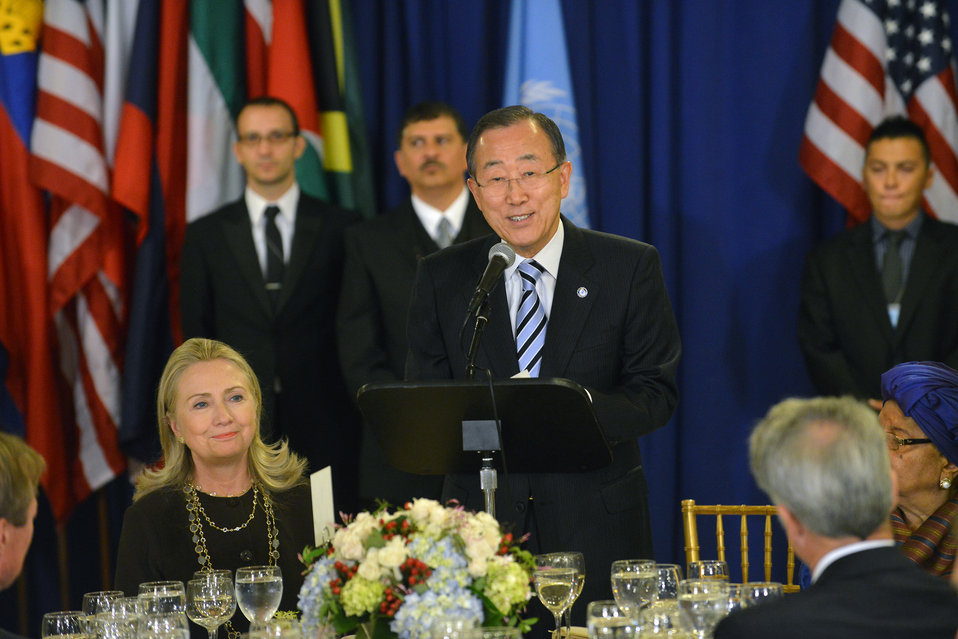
Secretary Clinton Participates in the Head of State Luncheon at the United Nations

U.S. Secretary of State Hillary Rodham Clinton participates in the Head of State Luncheon hosted by United Nations Secretary General Ban Ki-moon at the United Nations in New York, New York on September 25, 2012.